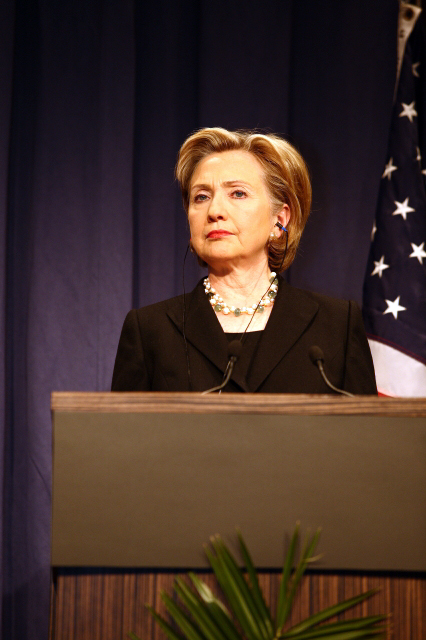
Press Conference With Russian Foreign Minister

Press conference after dinner meeting between U.S. Secretary of State Hillary Rodham Clinton and Russian Foreign Minister Sergey Lavrov in Geneva, Switzerland March 6, 2009.